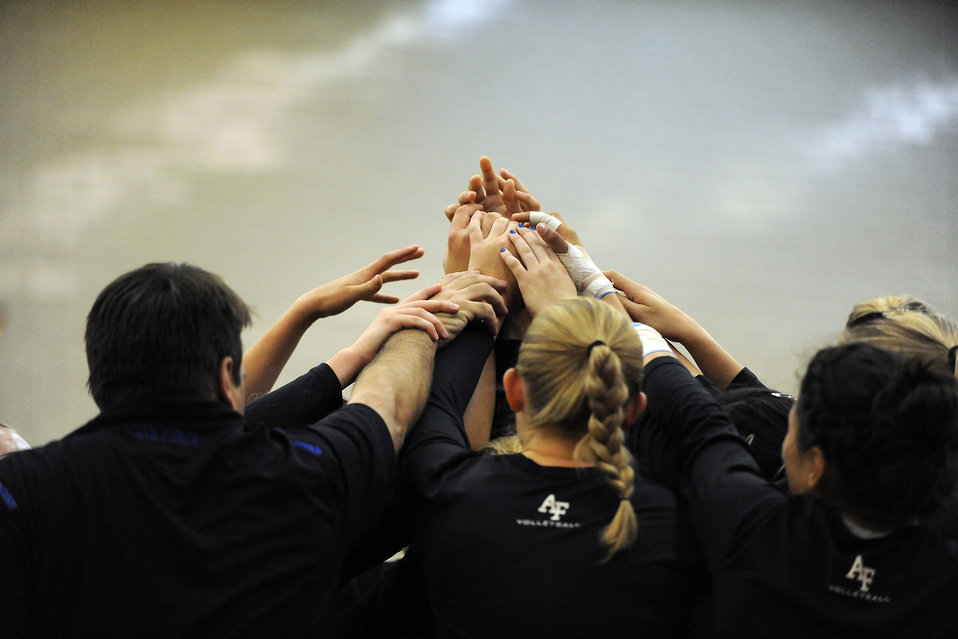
Cadet's show promise during women's volleyball tournament

Members of the Air Force Academy women's volleyball team huddle up before their season opener against Long Island College Aug. 27, 2010, at the U.S. Air Force Academy in Colorado Springs, Colo. The Falcons won 3-2 over Long Island with scores of 25-14, 22-25, 29-31, 25-19 and 15-9.